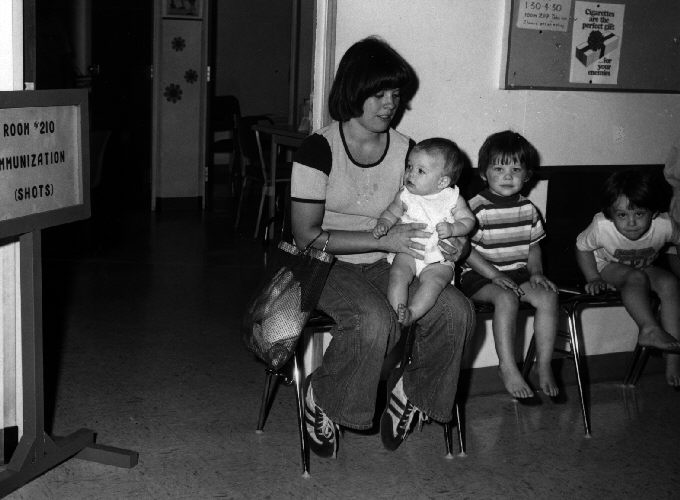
Well Baby Clinic in Dekalb County, GA.